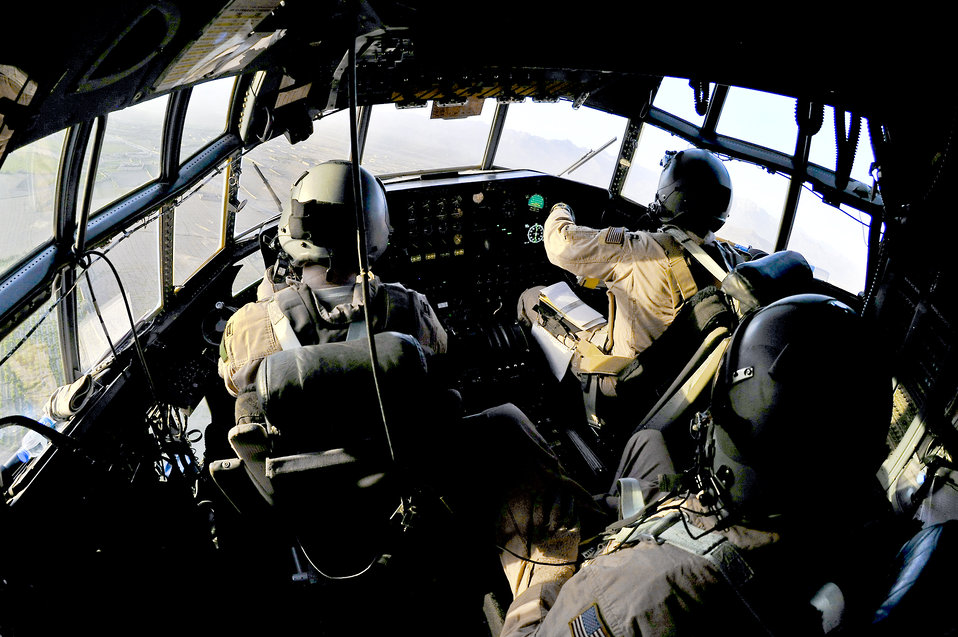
Pakistan flood aid tops 5 million pounds

Aircrew assigned to the 455th Air Expeditionary Wing fly meals to Pakistan as part of a humanitarian relief mission to assist more than 50,000 people July 31, 2010. To date, U.S. military helicopters and fixed-wing aircraft have transported more than 5.4 million pounds of relief supplies and rescued more than 13,000 people, delivering aid and providing transport to people who need emergency assistance. The aircrew is a part of an Air National Guard Unit deployed from Peoria, Ill.